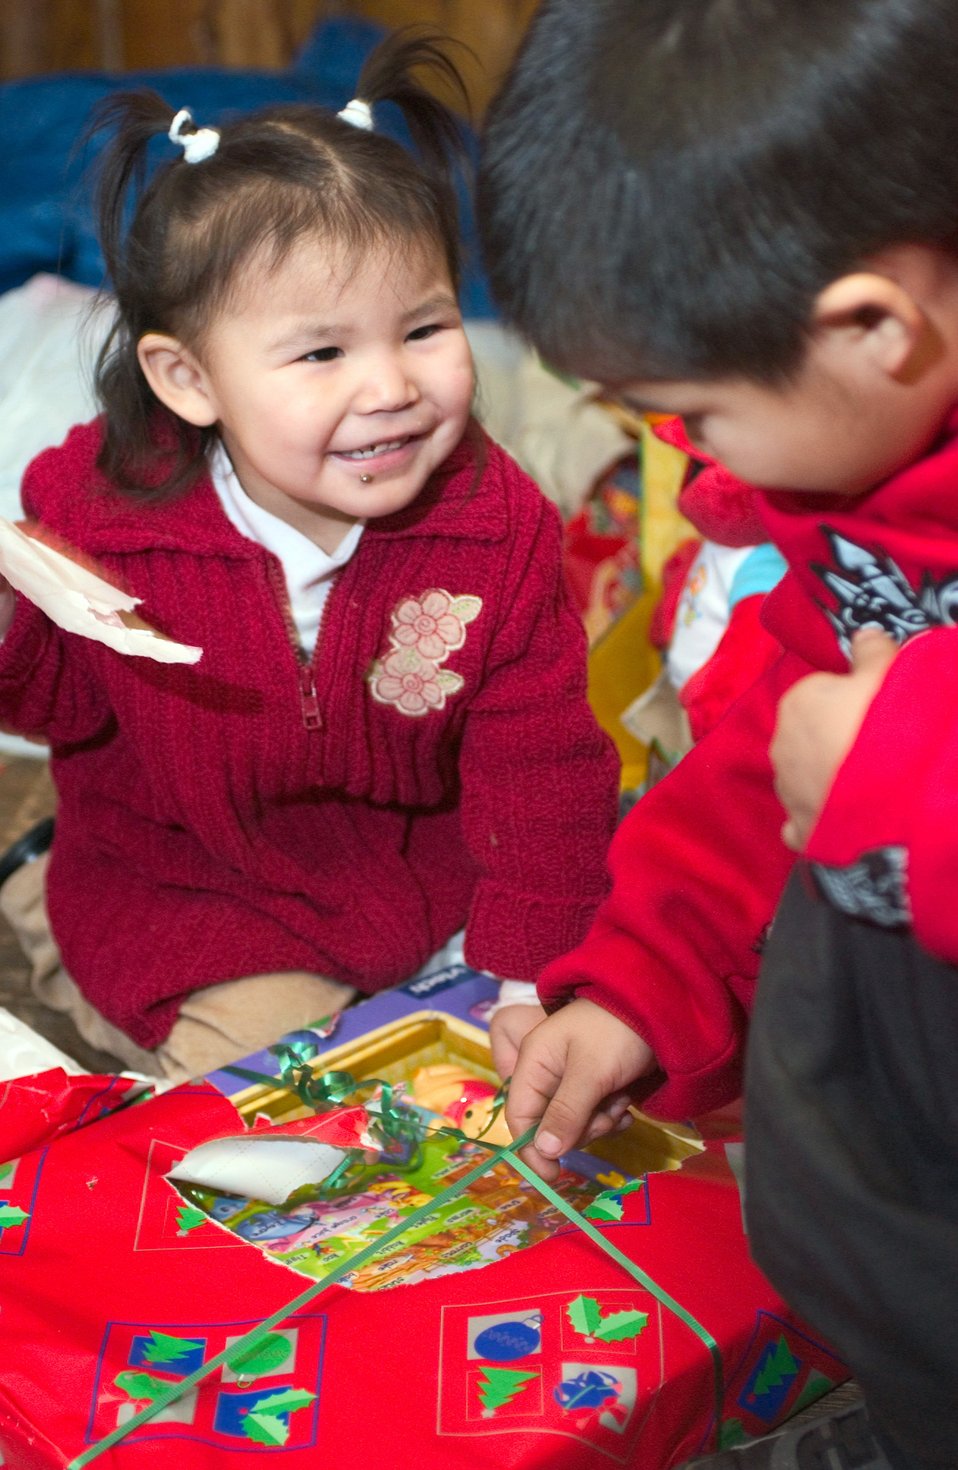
Airmen bring holidays to remote village

ARCTIC VILLAGE, Alaska (AFPN) -- Kyla Nikolai (left) and her brother, Kobi unwrap a present from Santa. Santa traveled with the 517th Airlift Squadron to Artic Village, Alaska, Dec. 13. The children and community gathered in the village town hall Dec. 13 to share their culture with the visiting Airman and their families. The 517th Airlift Squadron came to the village's aid in 1967 and has made an annual visit ever since.